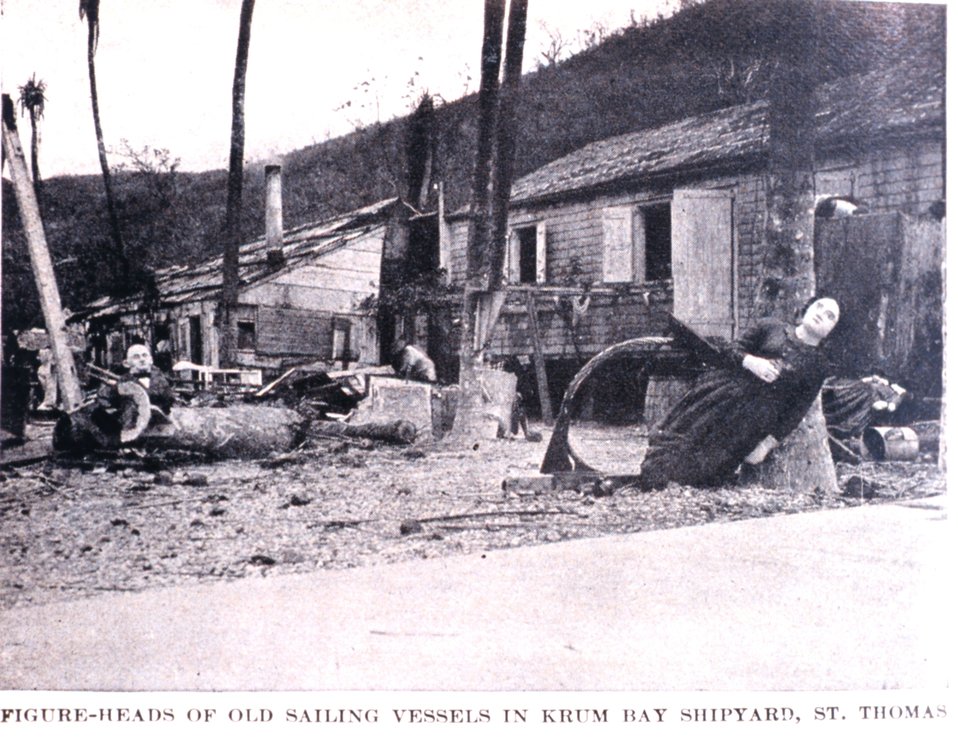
'Figure-heads of Old Sailing Vessels in Krum Bay Shipyard, St. Thomas.' In: 'The Virgin Islands Our New Possessions and the British Islands', by Theodoor De Booy and John T. Faris, 1918. J. B. Lippincott and Company, Philadelphia. P. 117. Library Call Number C/hc100 V81 B.